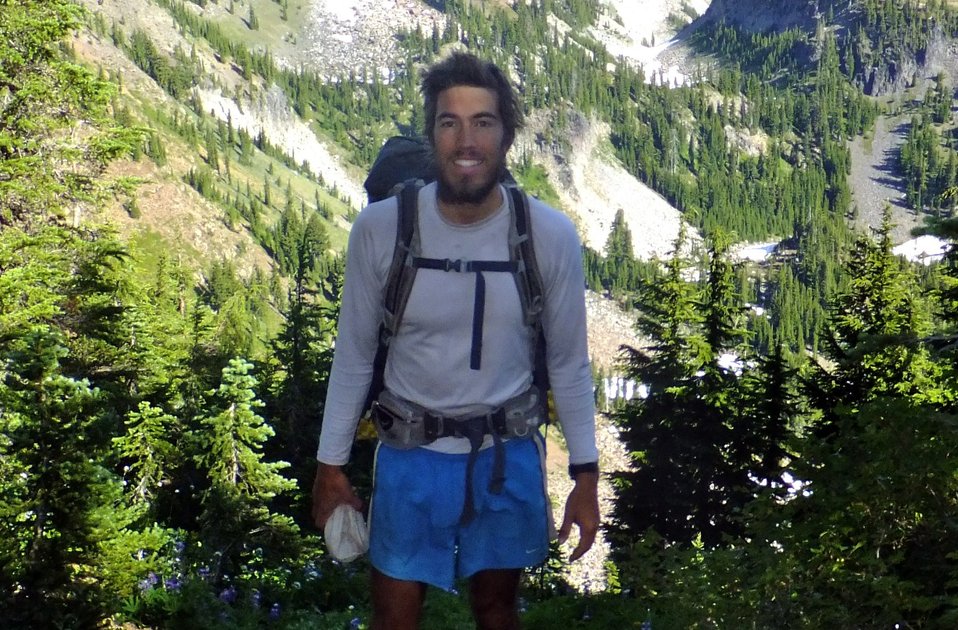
Alex Asai, civil engineer on the Gifford Pinchot National Forest in Vancouver, Wash. spent five months in 2011 hiking the 2,650-mile Pacific Crest Trail. Here Asai is on the Willamette National Forest in Eugene, Ore.